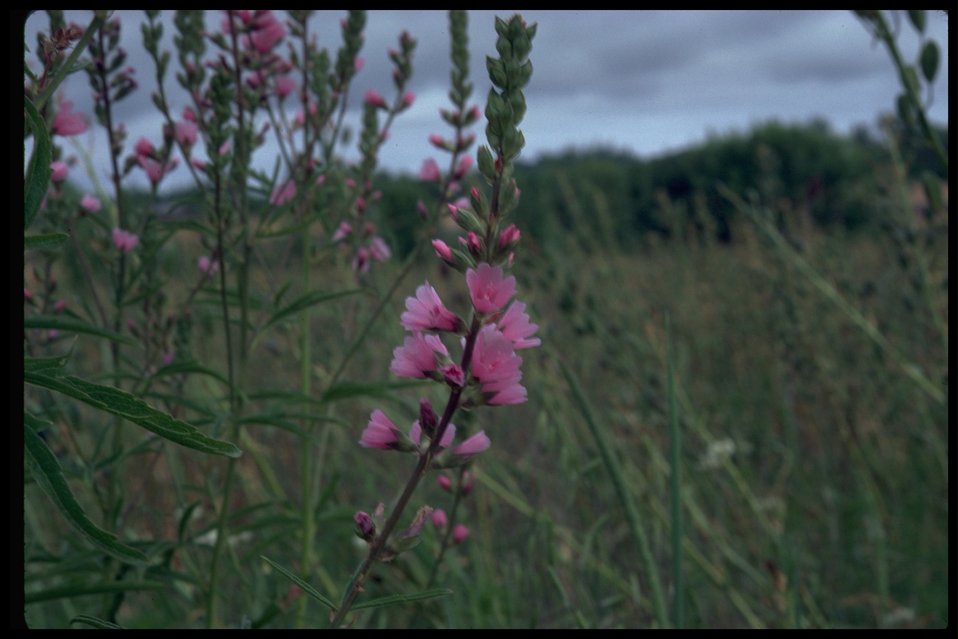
Sidalcea cusickii, commonly known as Cusick's sidalcea.